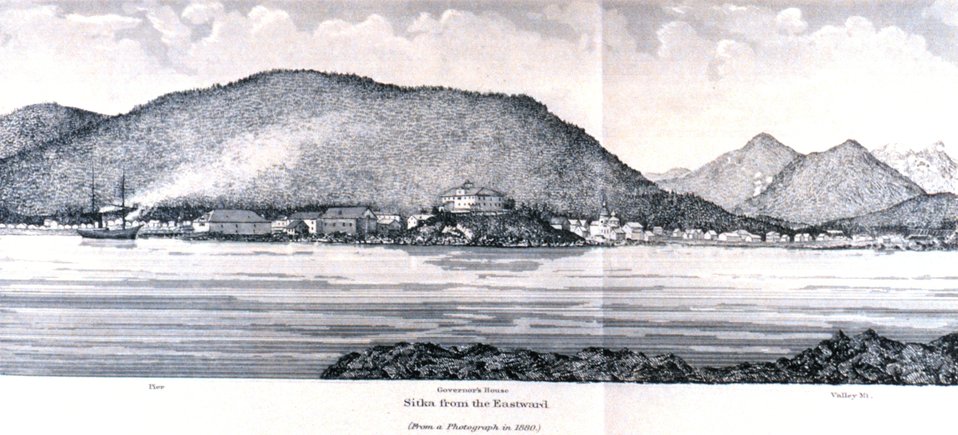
Sitka from the eastward. In: Pacific Coast Pilot Alaska Part I 1883. P. 136. Library call number VK943 .N3 1883.